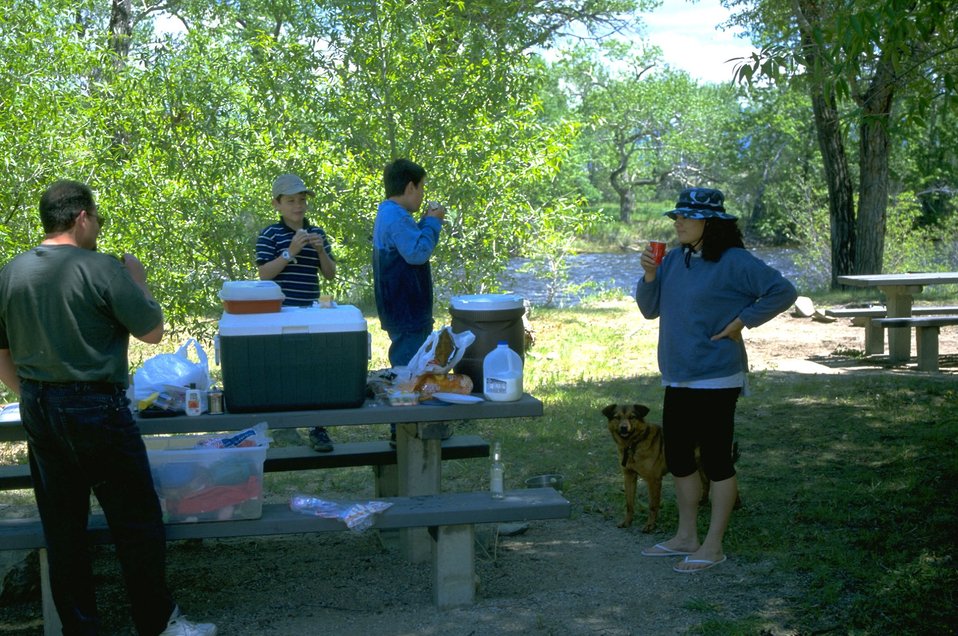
Picnicking at Divide Day Use Area